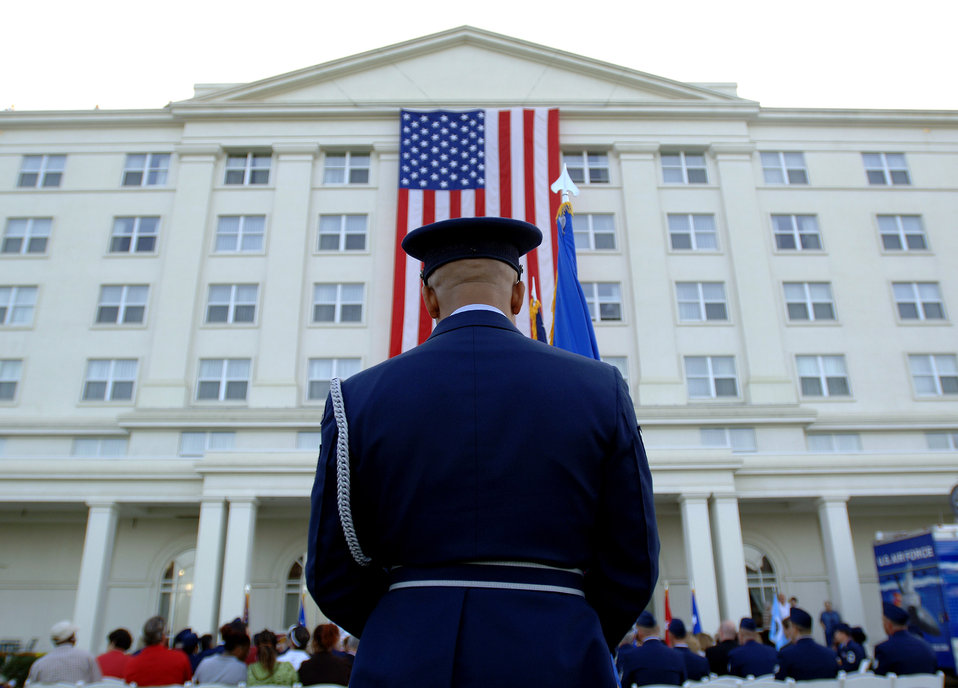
Air Force Week Atlanta kicks off

Honor guard members from Dobbins Air Reserve Base, Ga. prepare to post the colors during a proclamation ceremony at the Marietta conference center Oct. 8 kicking off Air Force Week Atlanta. Atlanta is one of six cities throughout the country chosen to host an Air Force Week Oct. 8 to 14. The theme for the year is